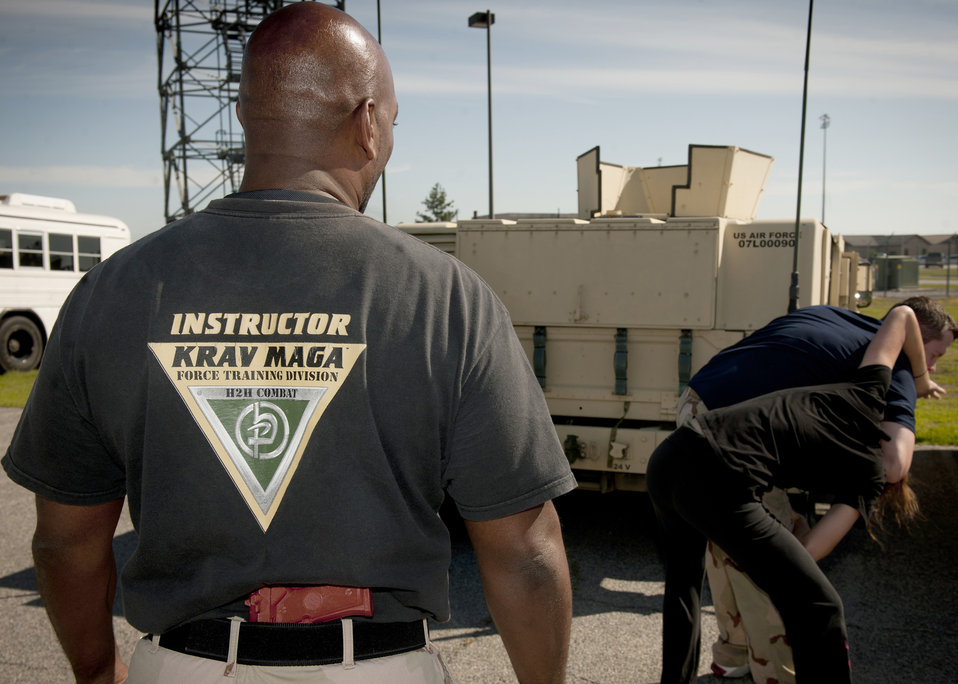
Krav Maga training gives Airmen the combat edge

A Krav Maga instructor observes an Airman attempting to break a choke hold during a recent training scenario at Moody Air Force Base, Ga. Krav Maga is the official self-defense system of the Israeli defense forces. Base defense and security forces squadrons have applied the techniques to better prepare Airmen for combat defense.